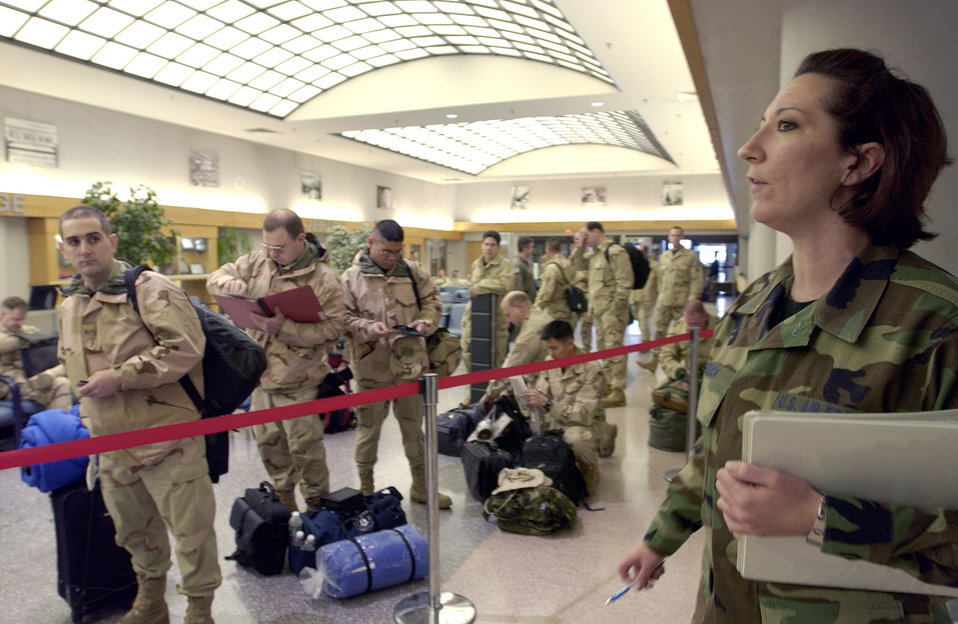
Deployments Extended

MCGUIRE AIR FORCE BASE, N.J. -- Tech. Sgt Cindy Beck (right) briefs airmen before they deploy from the base here. Air Force officials are extending current and upcoming deployment rotation lengths to meet the needs of combatant commanders. Beck is the noncommissioned officer in charge of the personnel deployment function at McGuire.